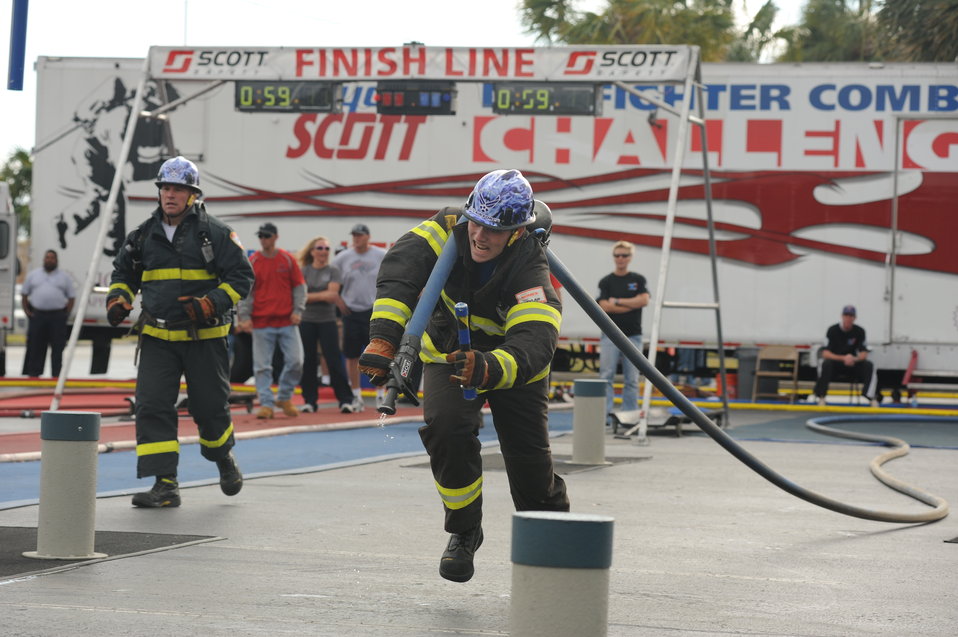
World Firefighter Combat Challenge

Anthony Beaudry hauls a water-laden firehose to its target Nov. 17, 2011, during the World Firefighter Combat Challenge XX in Myrtle Beach, S.C. Beaudry and his fellow firefighters from Whiteman Air Force Base, Mo., came in second in the world among men's relay teams.